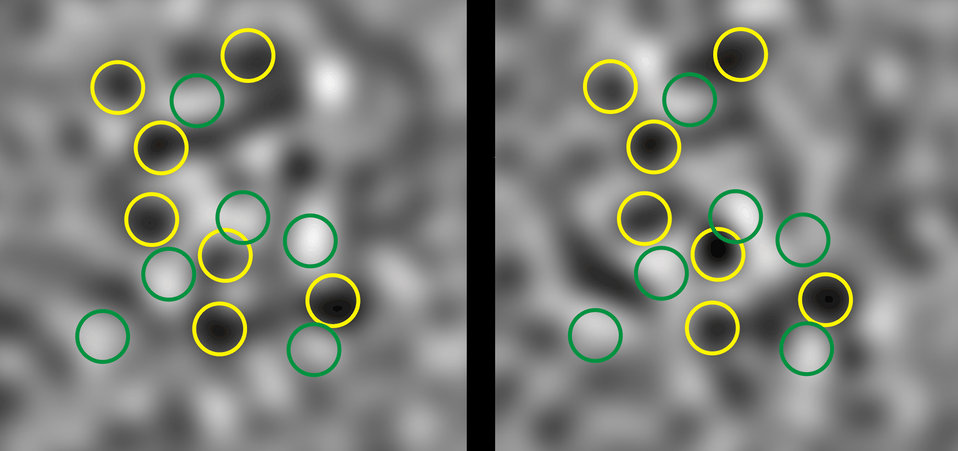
Quantum Physics; Atom Pairs; Noise Patterns

Similar patterns of 'noise' are evident in these two images. The images are taken directly after molecules have been split into entangled atom pairs. Each of the pictures shows the absorption of laser light by potassium atoms in one out of two different energy states. High concentrations of atoms absorbing light are circled in yellow, and areas with fewer atoms are circled in green. The similar pattern in the two images directly shows the correlation between atoms in the different states.